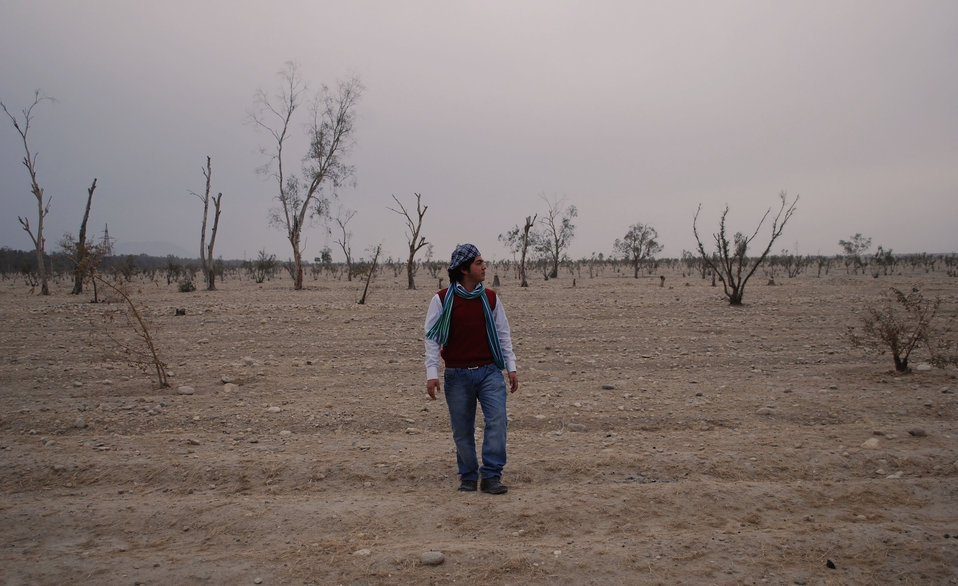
'On the Road' in Nangarhar Province